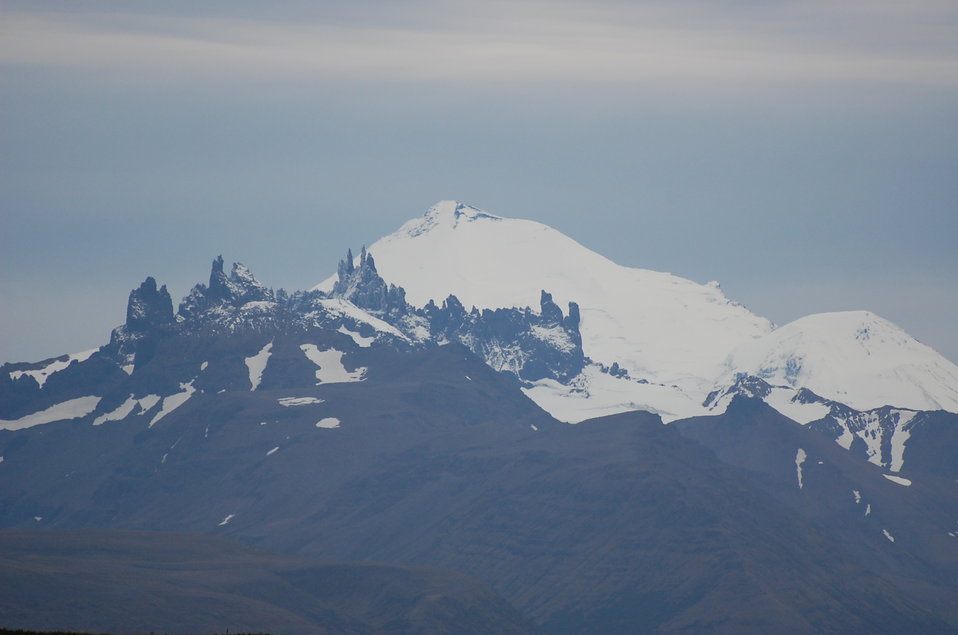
Aghileen PinnaclesandPavlof volcano

View of Aghileen Pinnacles and Pavlof Volcano from Kinzarof Lagoon, Izembek National Wildlife Refuge